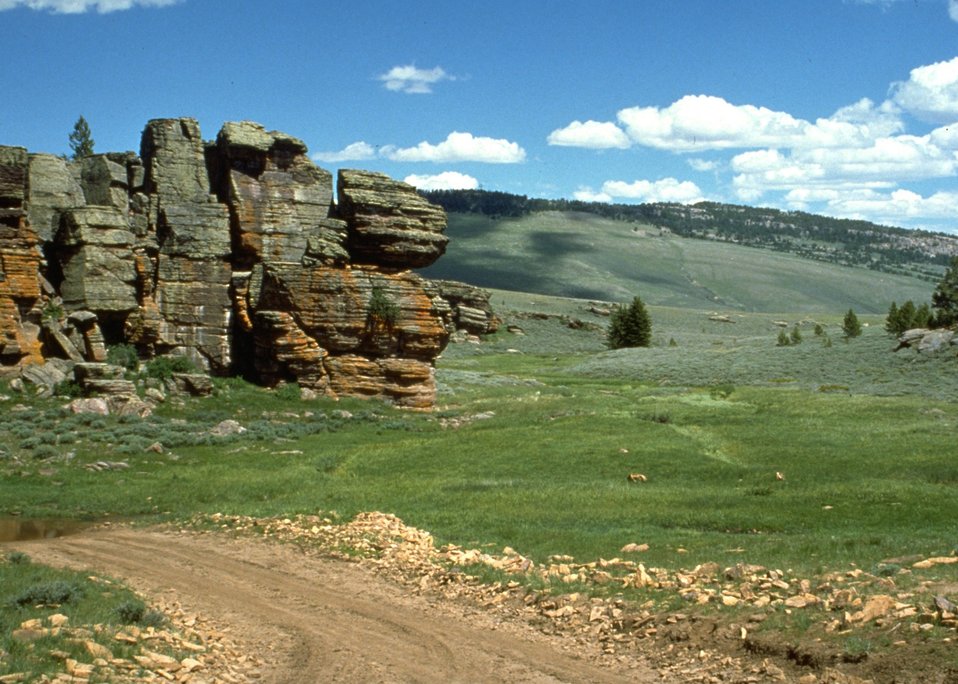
Scenic rock area.